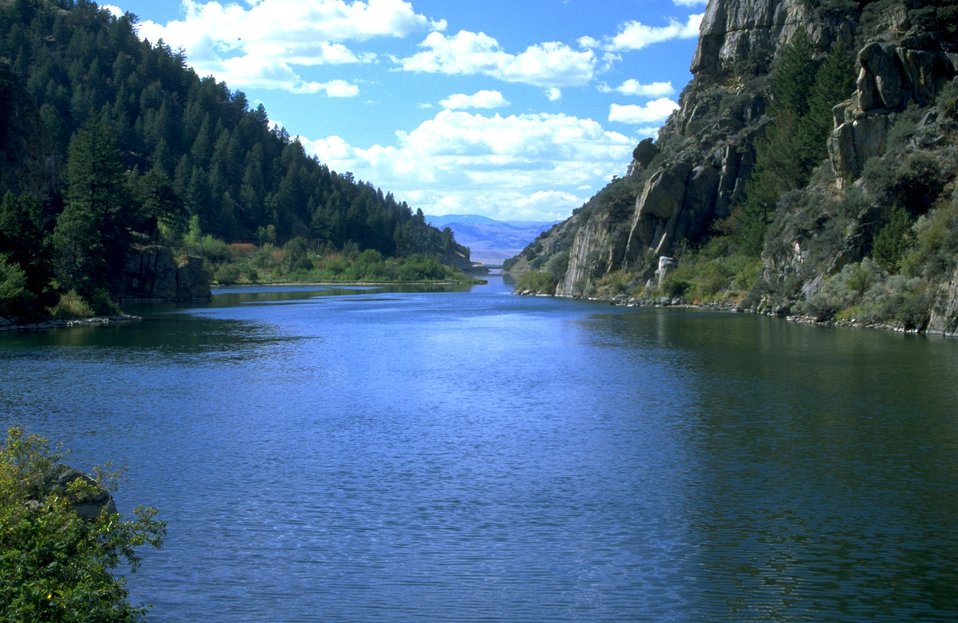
Beautiful view of the Madison River